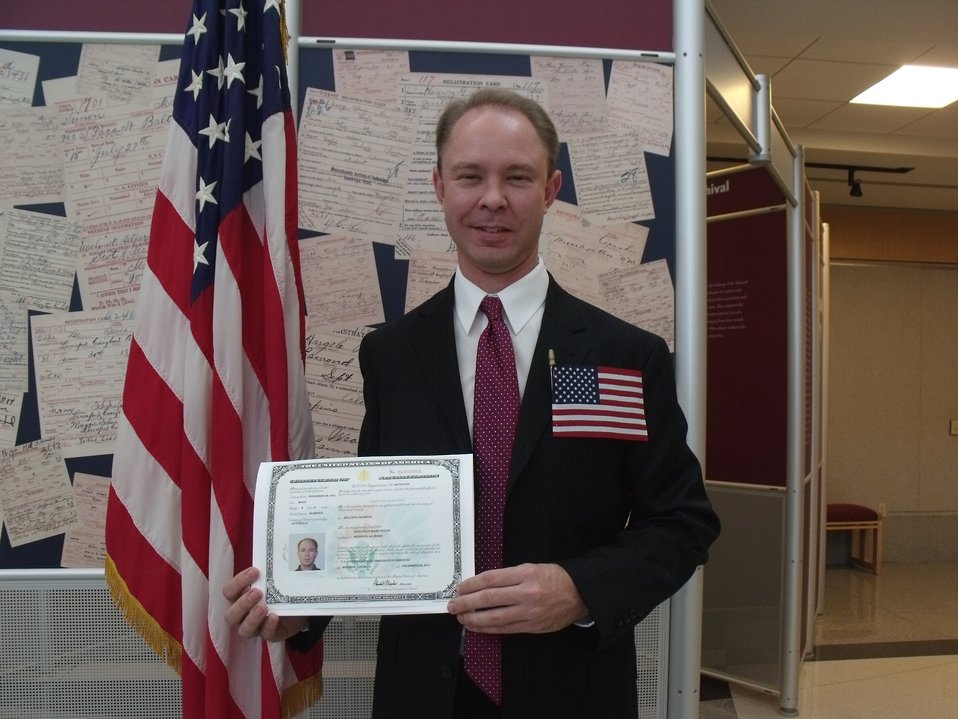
New Citizens